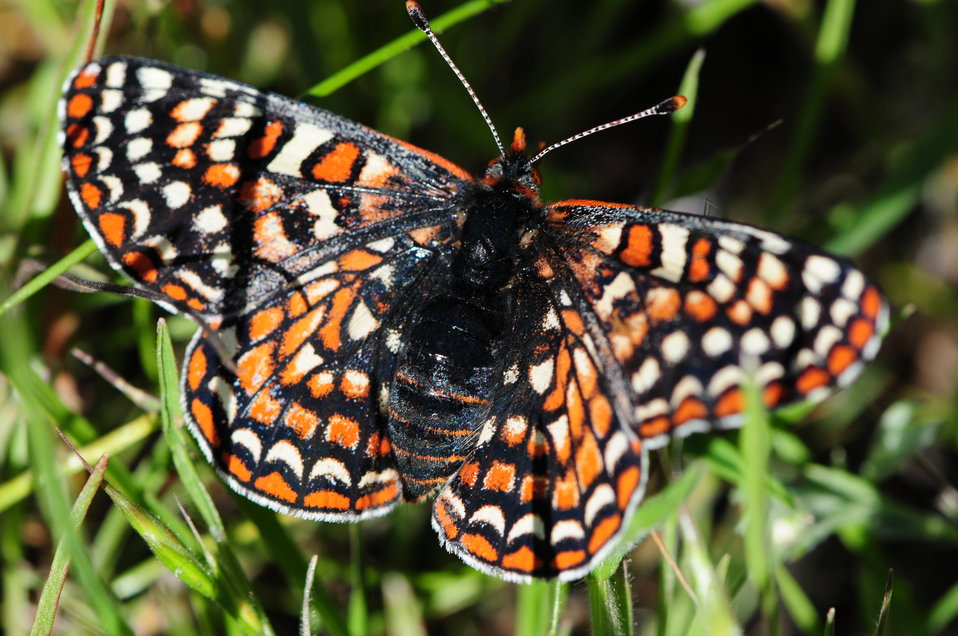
Bay Checkerspot Butterfly

Photo Credit: Josh Hull/USFWS

Species protected by the Santa Clara Valley Habitat Conservation Plan